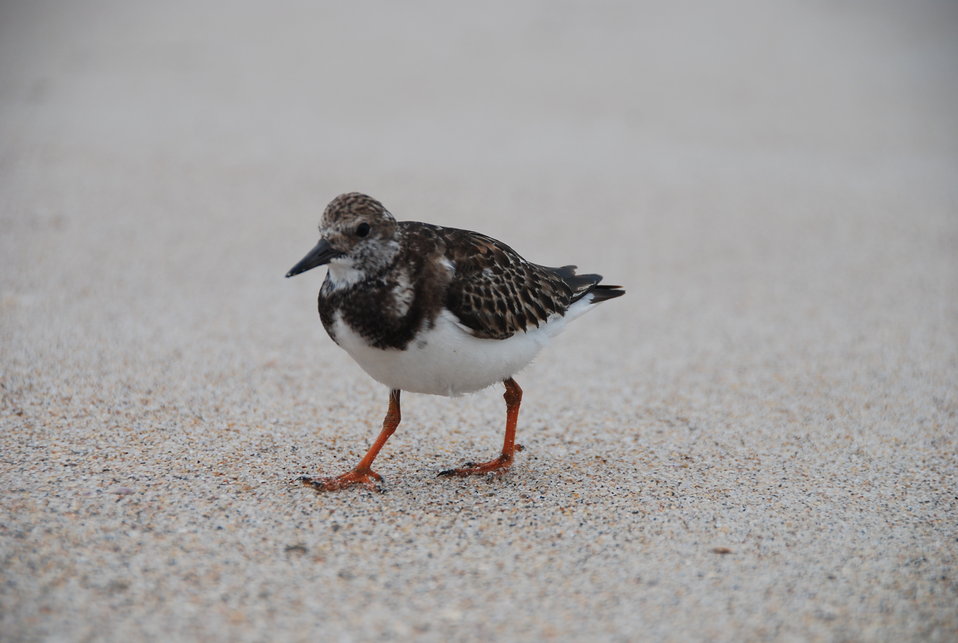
Ruddy turnstone